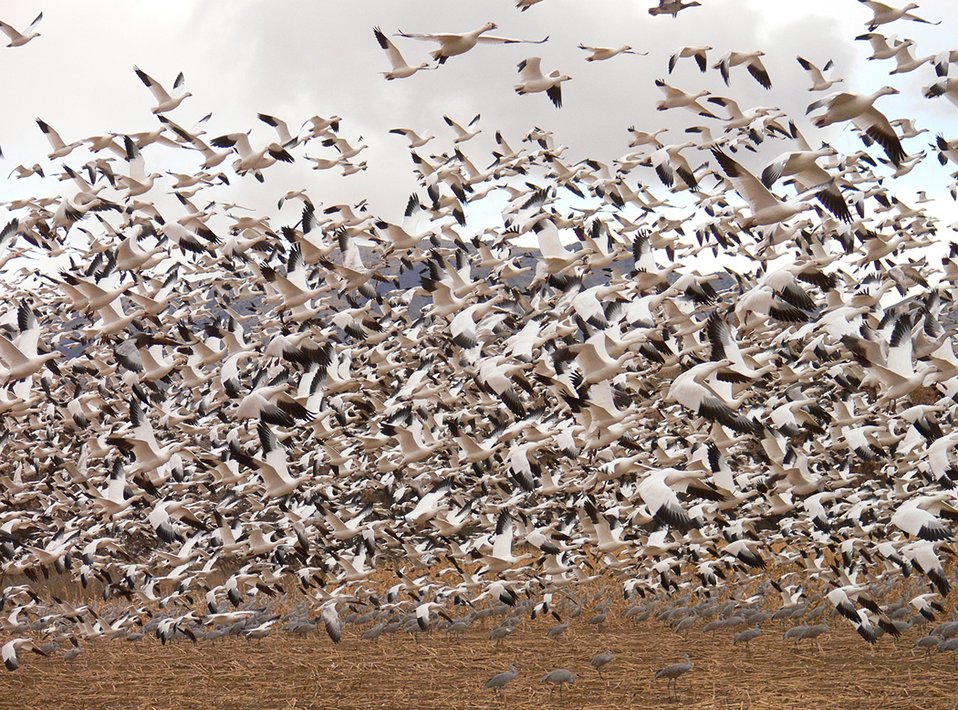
Bosque del Apache NWR snow geese

Snow geese take to the sky at Bosque del Apache National Wildlife Refuge in New Mexico.